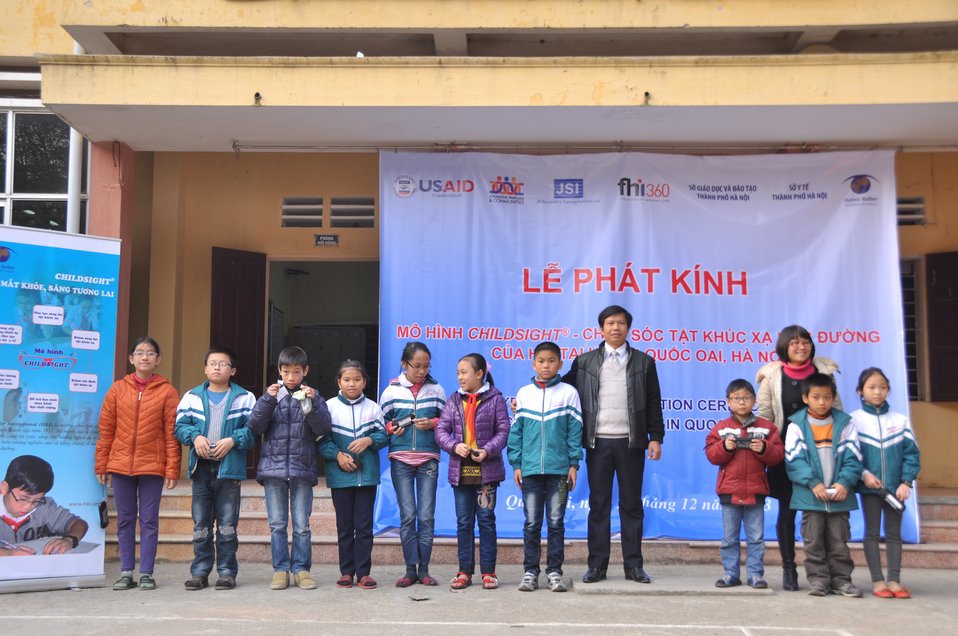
USAID supports distribution of eyeglasses to pupils and teachers in Quoc Oai, Hanoi.

Kieu Phu Junior Secondary School, Quoc Hoai, Hanoi, December 23, 2013.